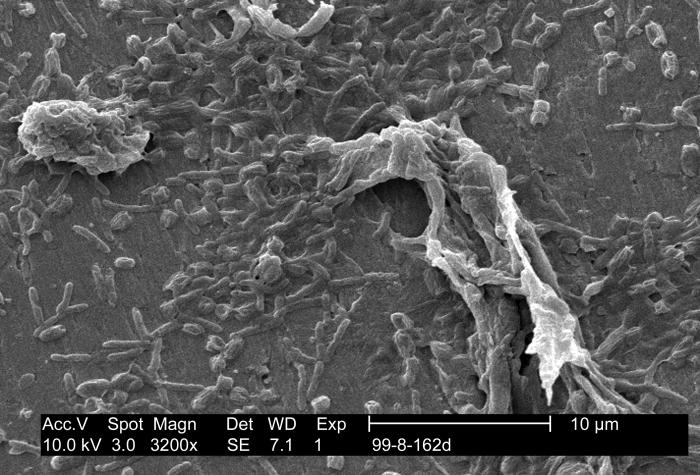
This scanning electron micrograph (SEM) depicts findings uncovered during Legionella pneumophila research, which investigated the association of amoebae when present with L. pneumophila bacteria existing on potable water biofilms; Mag. 3200x.